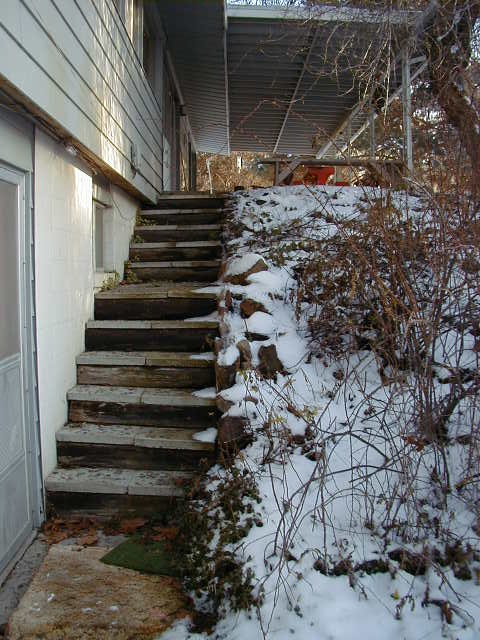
Environmental Education McCord house Boise Front Foothills Fire Safety and Urban interface Four Rivers Field Office LSRD Lower Snake River District